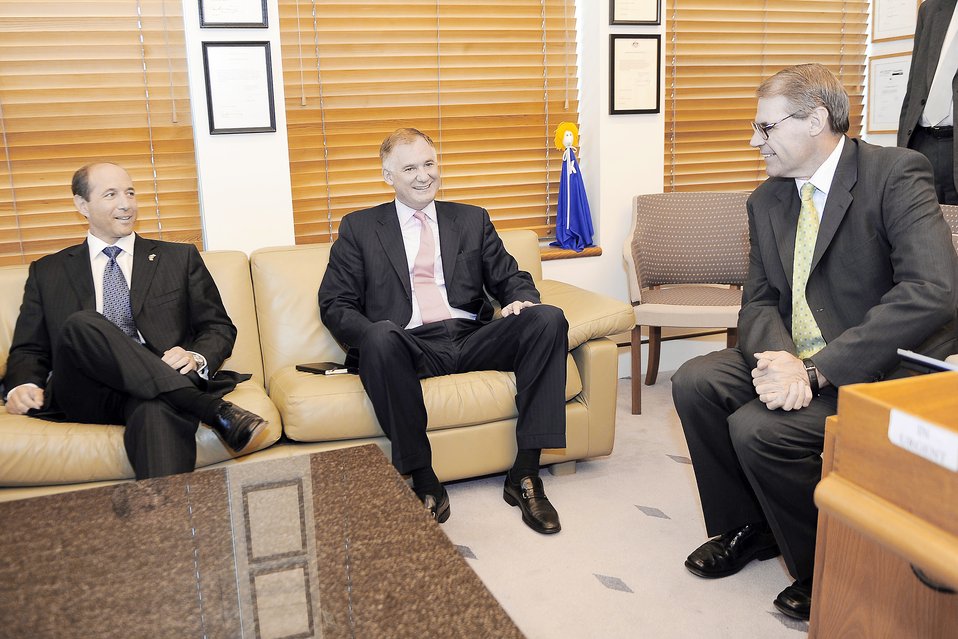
Deputy Defense Secretary William Lynn

U.S. Ambassador to Australia Jeffrey Bleich (left) and U.S. Deputy Defense Secretary William J. Lynn III meet with Australia's Defense Minister John Faulkner, right, in Canberra, Australia, Feb. 16, 2010.